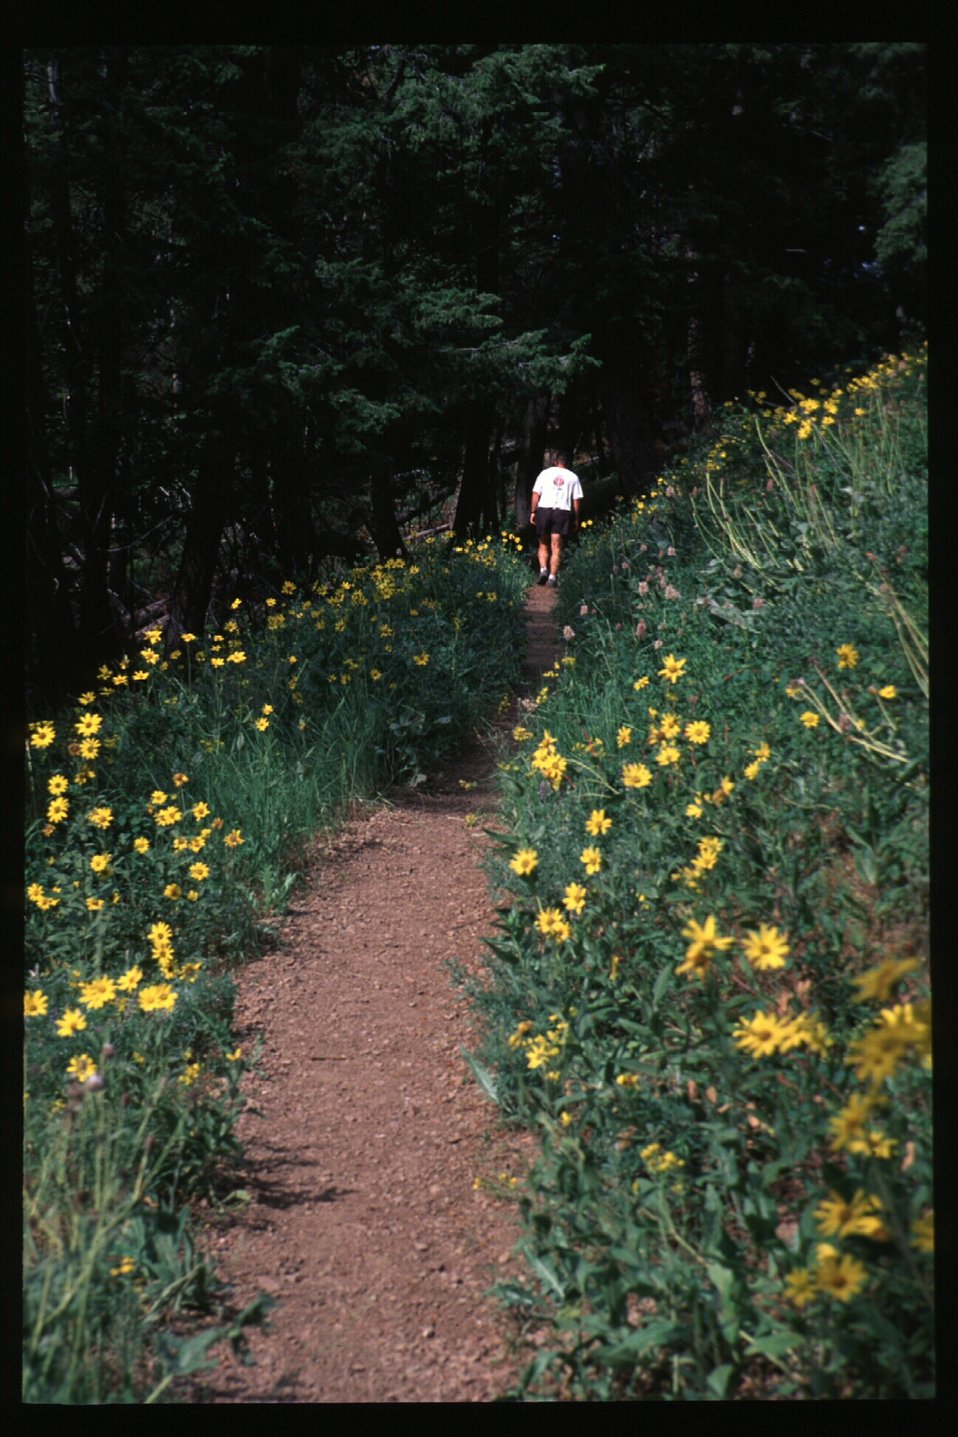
Recreation Scenic Biker Shoshone Field Office USRD Upper Snake River District Bald Mountain Trail Hikers in Wildflowers